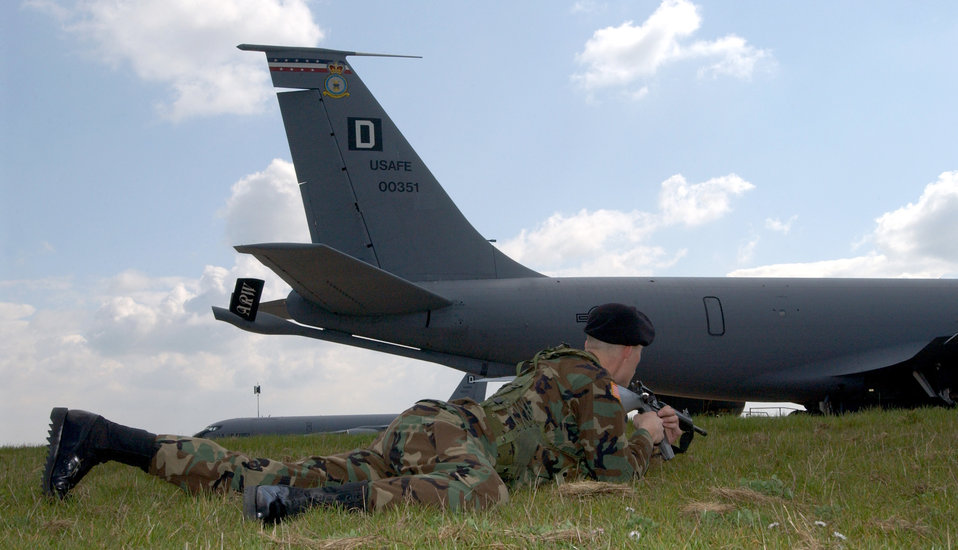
Stop alert

ROYAL AIR FORCE FAIRFORD, England -- A member of the 100th Security Forces Squadron helps create a perimeter around a KC-135 Stratotanker as part of a stop alert exercise here April 13. The 100th Security Forces Squadron is located at Royal Air Force Mildenhall, England.